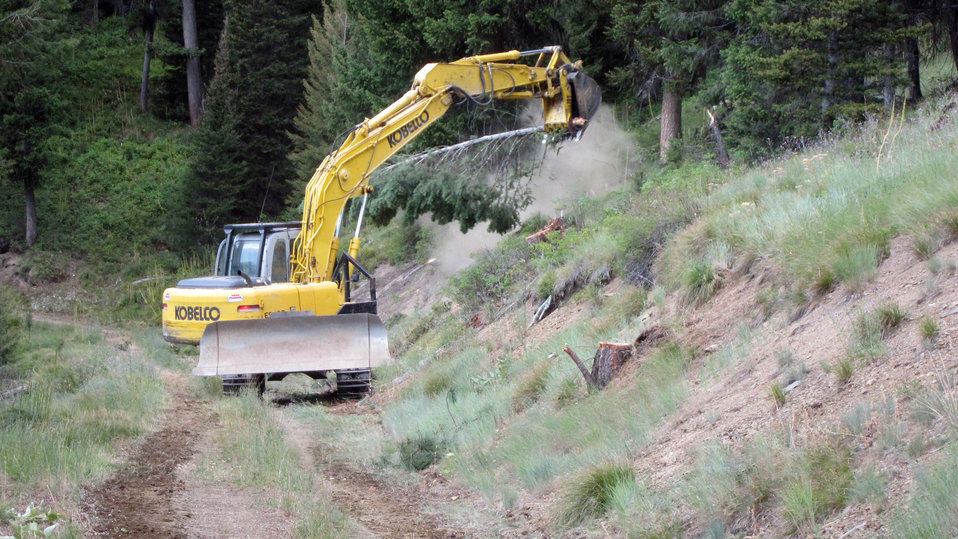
Excavator clears understory vegetation as part of a fuel break for a contingency fire line construction along Forest Road No. 1303 at the Gold Pan Fire in the Bitterroot National Forest. The Gold Pan Fire in the Bitterroot National Forest near Conner, MT began by lightning on Jul. 16, 2013 by lighting have consumed approximately 16,330 acres.